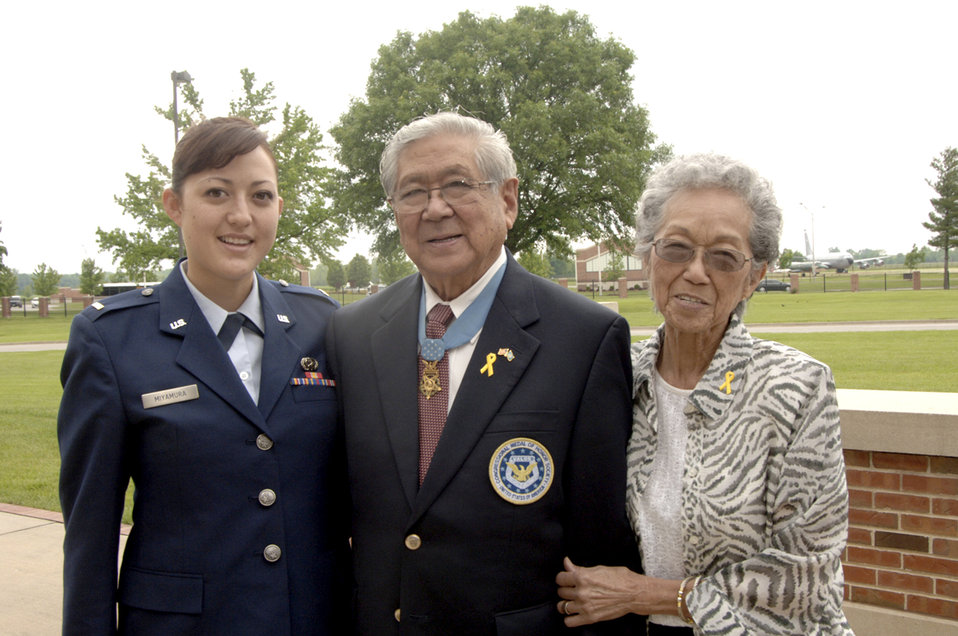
Medal of Honor recipient Hiroshi Miyamura stands with 2nd Lt. Marisa Miyamura, his granddaughter, and Terry, his wife of 62 years May 17, 2010, at Scott Air Force Base, Ill. Mr. Miyamura shared his experiences as a Korean War veteran and POW with members at Scott AFB as part of Asian-Pacific American Heritage Month celebrations. Lieutenant Miyamura is a communications officer assigned to Scott AFB.